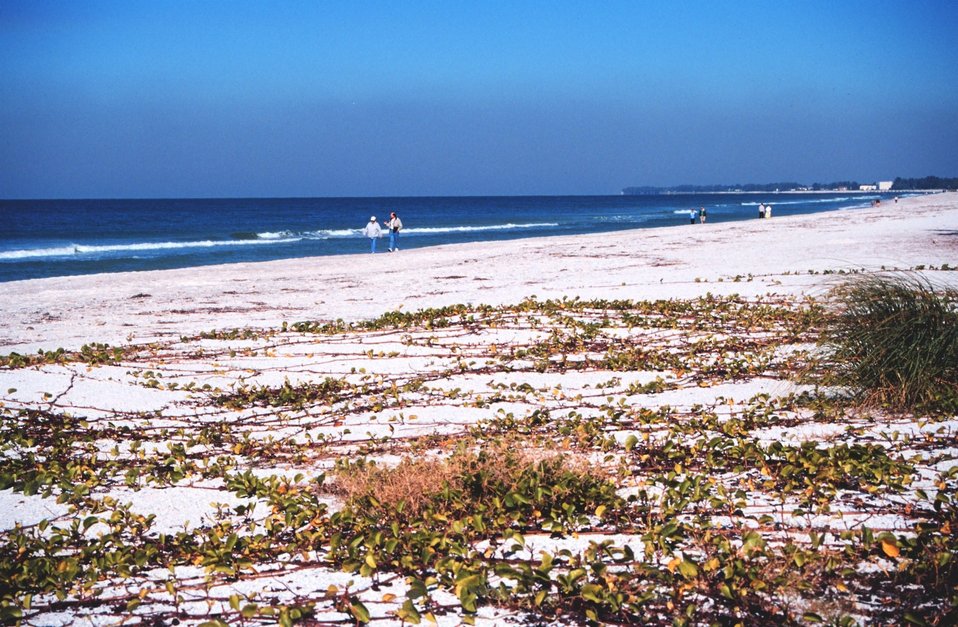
A view of the beach along the Gulf of Mexico